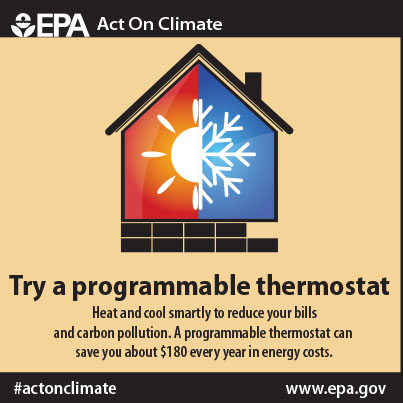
Try a programmable thermostat to save on your energy bills and reduce carbon pollution. #ActOnClimate www.epa.gov/earthday/actonclimate/